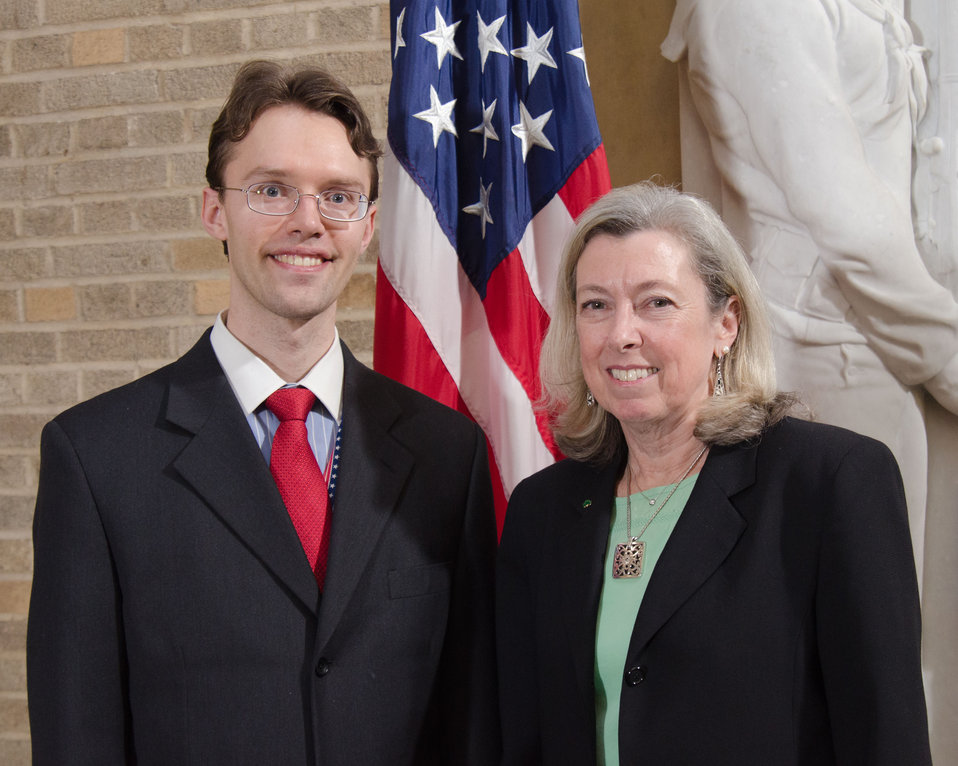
New Foreign Service Officer Andrew Anderson-Sprecher (left) is congratulated by, Foreign Agriculture Service Acting Administrator Suzanne Heinen, after being sworn in at a ceremony at the U.S. Department of Agriculture in Washington, D.C., on Thursday, March 15, 2012. Mr. Anderson-Sprecher will be stationed in Beijing, China.